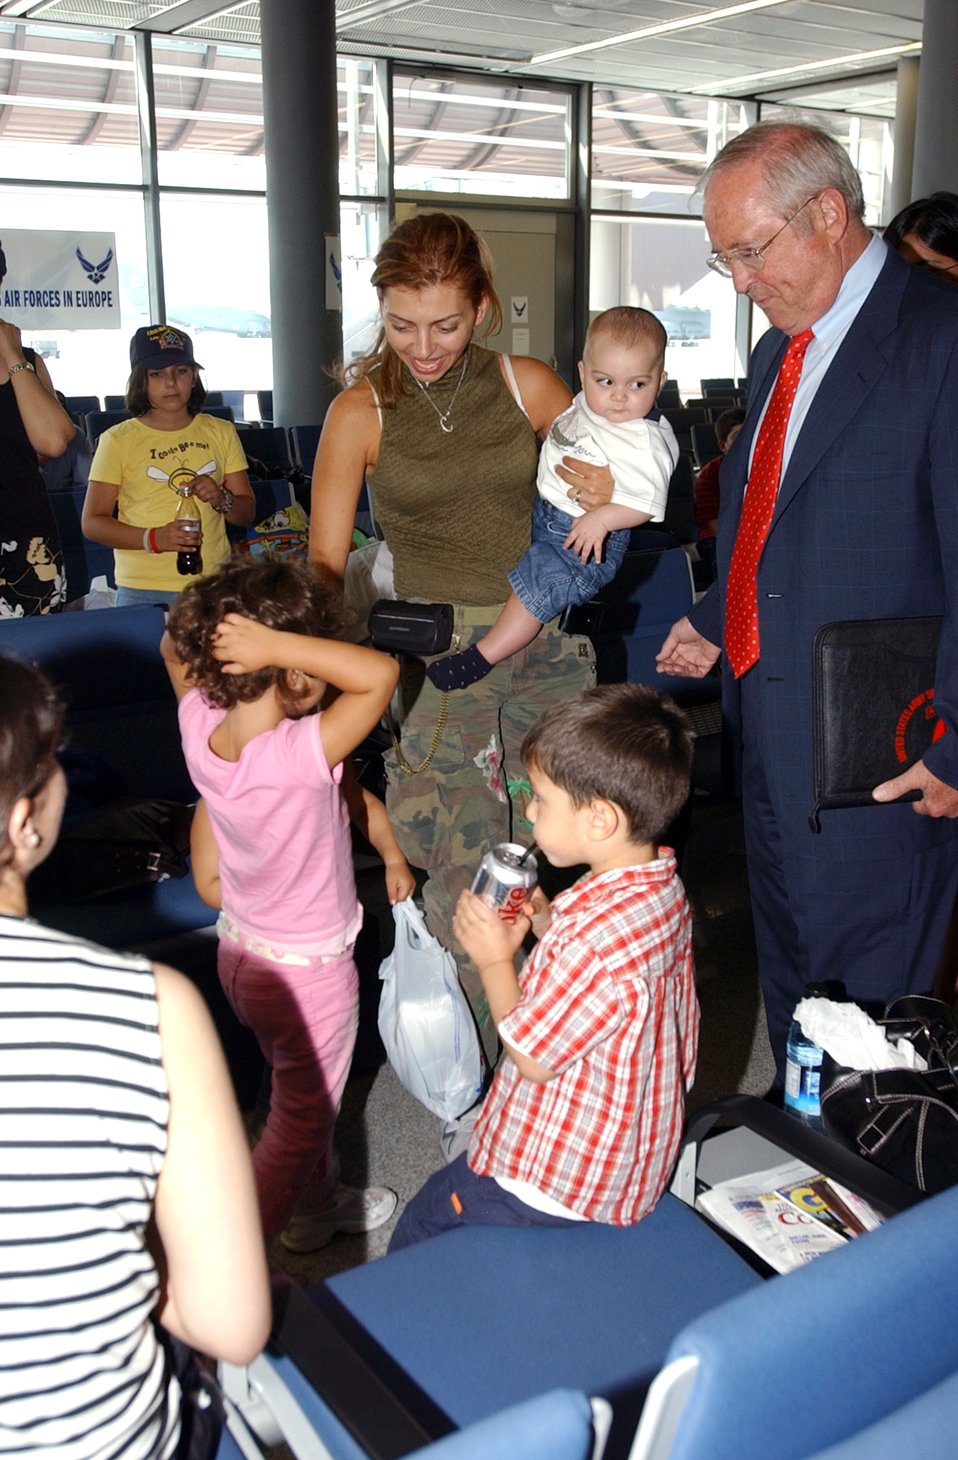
USAFE Airmen lauded for efforts in Lebanon operations

The Honorable William R. Timken, Jr., U.S. Ambassador to Germany, speaks with displaced Americans at the passenger terminal at Ramstein Air Base, Germany, on July 25. Ramstein Airmen provided humanitarian assistance for American citizens departing the Lebanon crisis on their way to the United States.